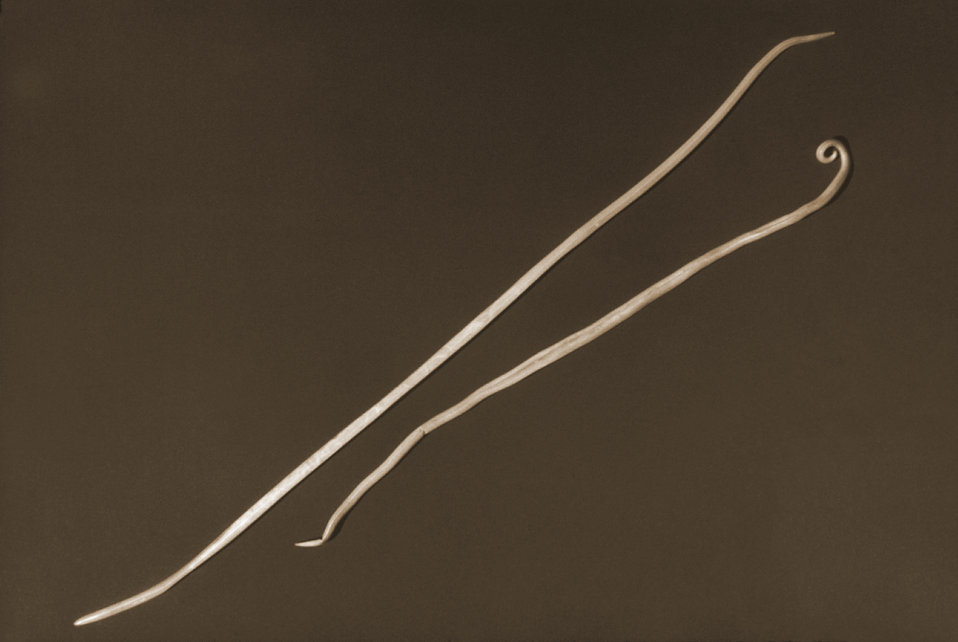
Depicted in this 1960 photograph were two Ascaris lumbricoides nematods, i.e., roundworms. The larger of the two was the female of the species, while the normally smaller male was on the right. Adult female worms can grow over 12 inches in length.